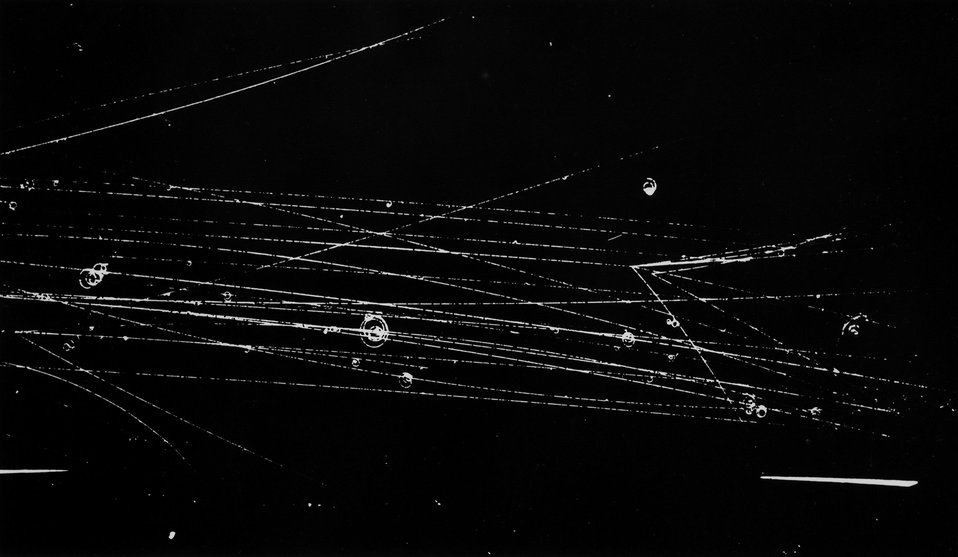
A photograph taken in the 20-inch liquid hydrogen bubble chamber, showing about
fifteen high energy pi-mesons entering in a parallel beam from the left.